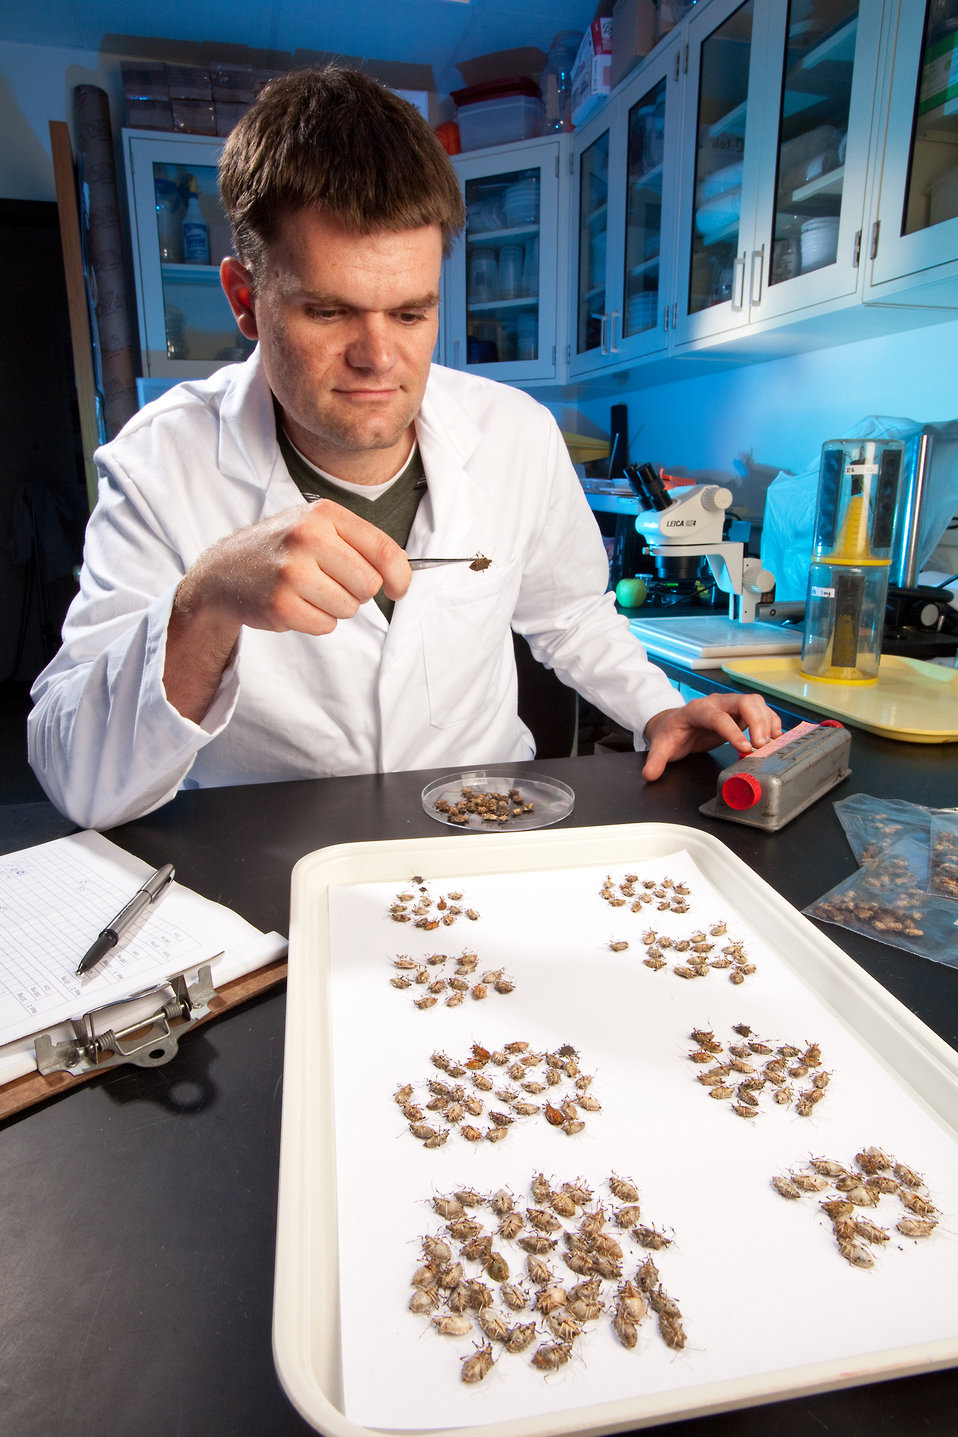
U.S. Department of Agriculture (USDA), Agriculture Research Service (ARS) technician Brent Short counts the number of adult males and females and other life stages of brown marmorated stink bugs captured in traps baited with experimental lures, in Beltsville, MD on Aug. 29, 2012.